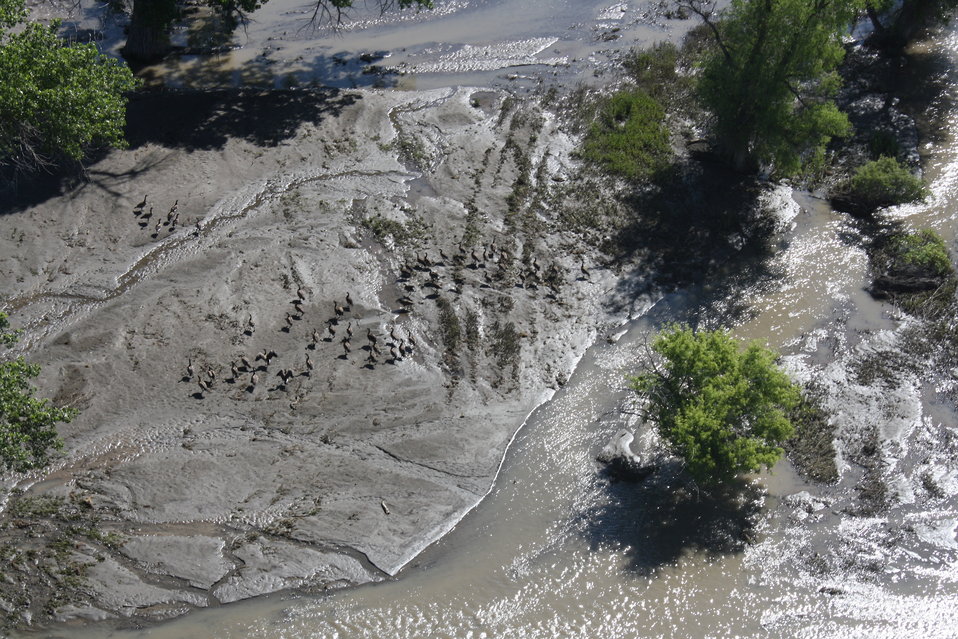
Canada geese in Impacted Portion of Yellowstone River

Resident Canada geese inhabit impacted portion of Yellowstone River July 9, 2011. The U.S. Fish and Wildlife Service conducts daily aerial wildlife surveys to identify, monitor and assess potentially oiled wildlife and their habitats.